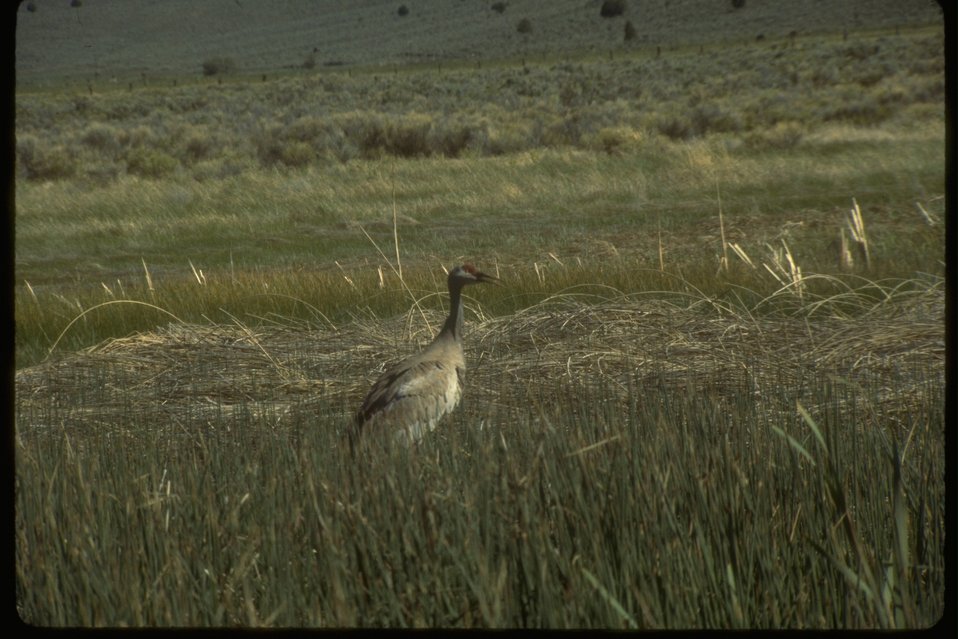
Sandhill Crane standing in some tall grass.